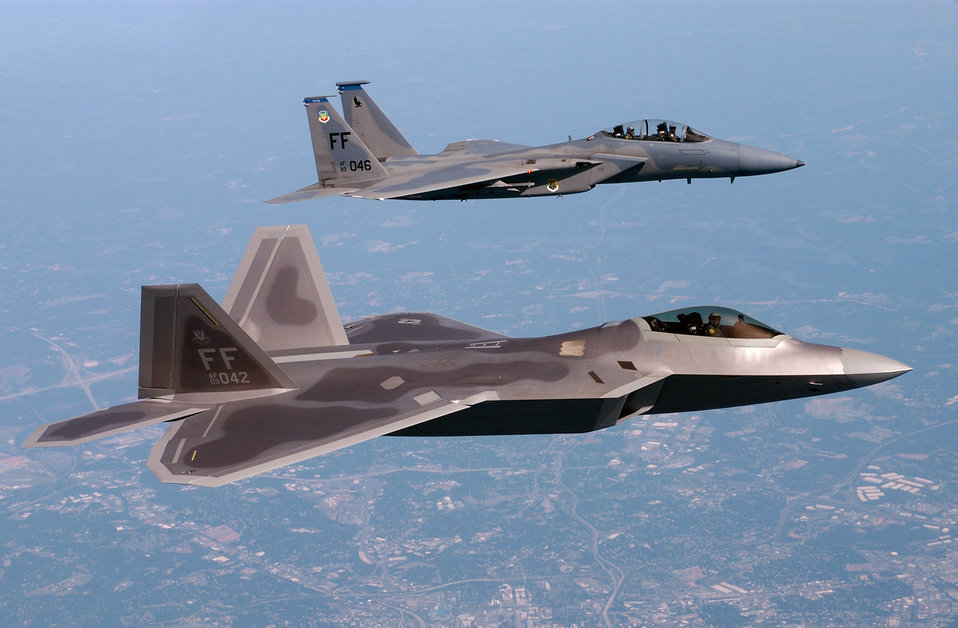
1st Fighter Wing has traveled the world

Lt .Col. James Hecker, the 27th Fighter Squadron commander, delivers the first operational F/A-22 Raptor to its permanent home at Langley Air Force Base, Va., on May 12, 2005.